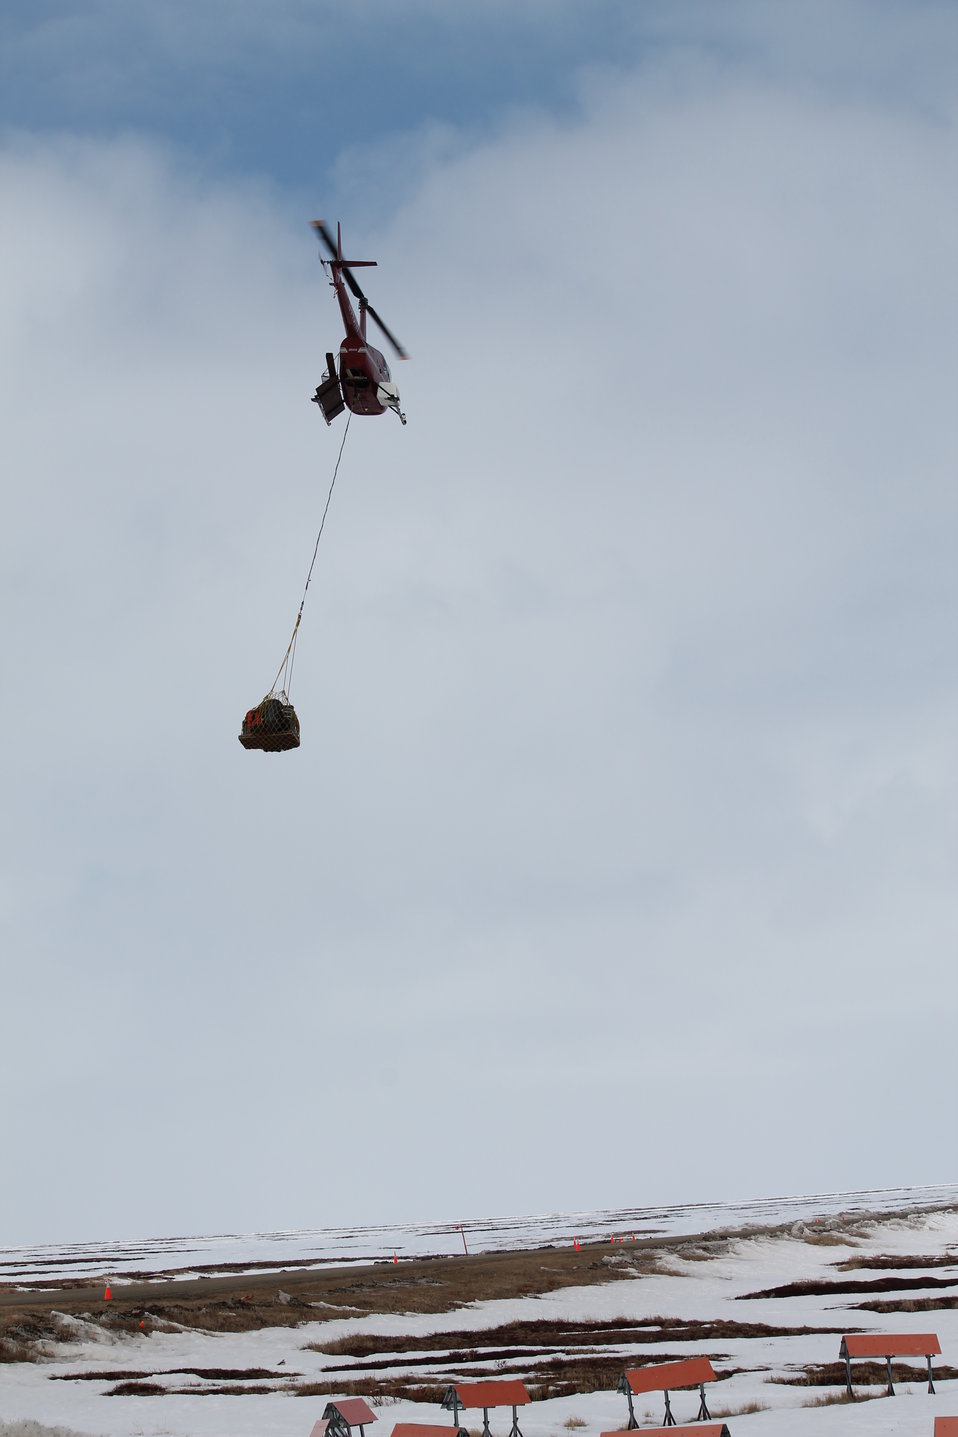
Helicopter Swinging Gear

At this camp site there was not enough snow for a ski-plane and no open water for a float plane so a helicopter was used to swing additional gear from a nearby village to the field camp.

USFWS Yukon Delta NWR